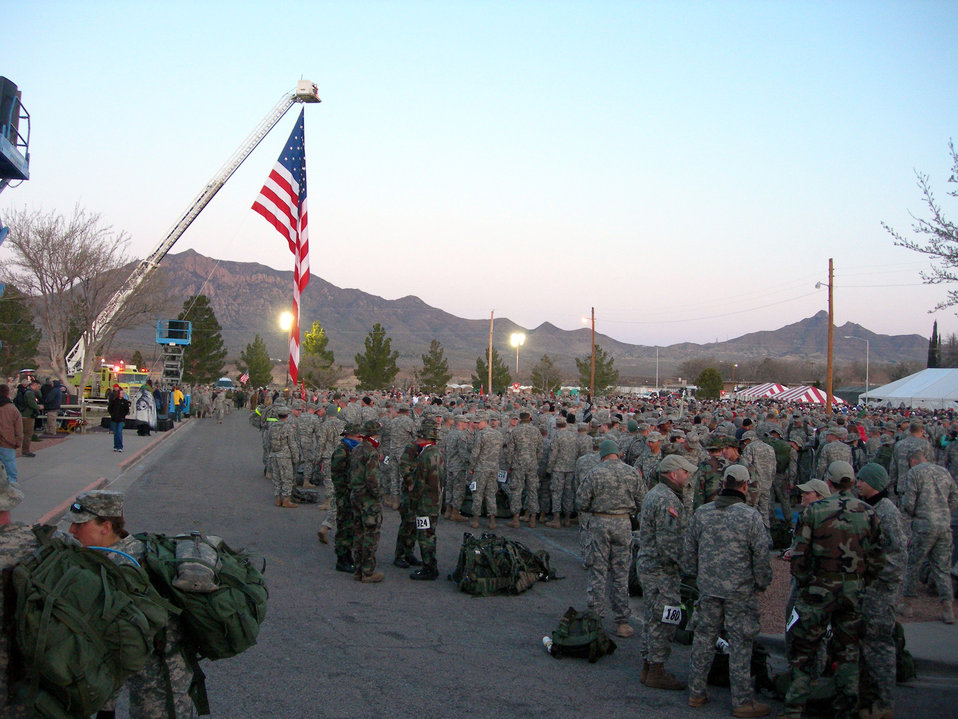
Luke Airmen honor Bataan march

More than 5,700 participants stand by at the opening ceremonies at the Bataan Memorial Death March March 21, 2010, at White Sands Missile Range, N.M. The event included 22 survivors of the Bataan Death March in 1942.